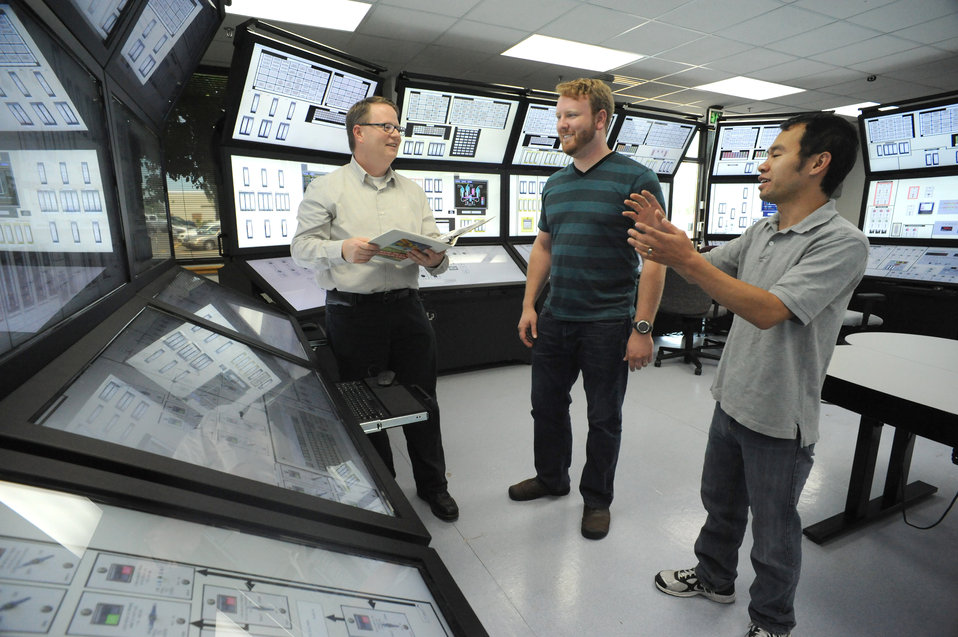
AT IDAHO NATIONAL LABORATORY, HUMAN SYSTEMS SIMULATION RESEARCHERS RUN A PRACTICE SIMULATION.